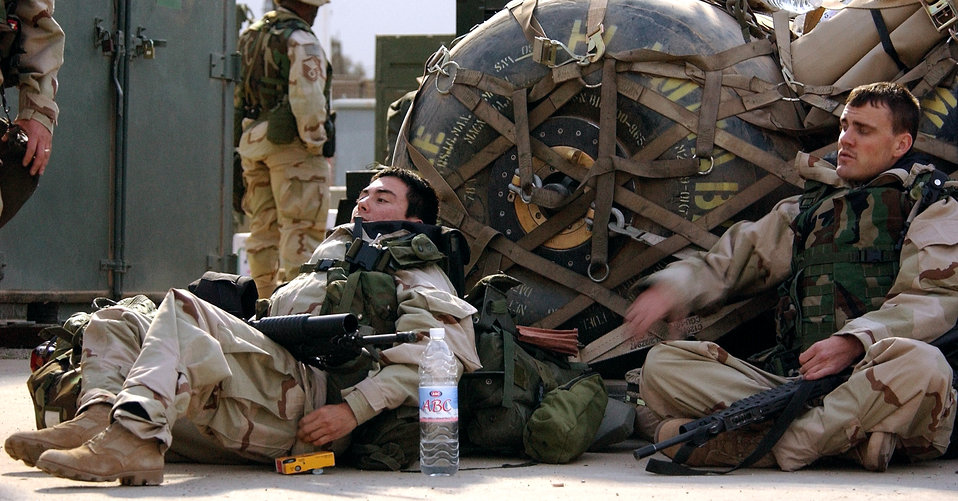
A quick rest

OPERATION IRAQI FREEDOM -- Members of the 821st Tanker Airlift Control Element take a moment to rest after loading their personal bags onto a pallet for shipment to a deployed location March 27, 2003. The 821st TALCE is forward deploying to an undisclosed location in support of Operation Iraqi Freedom.